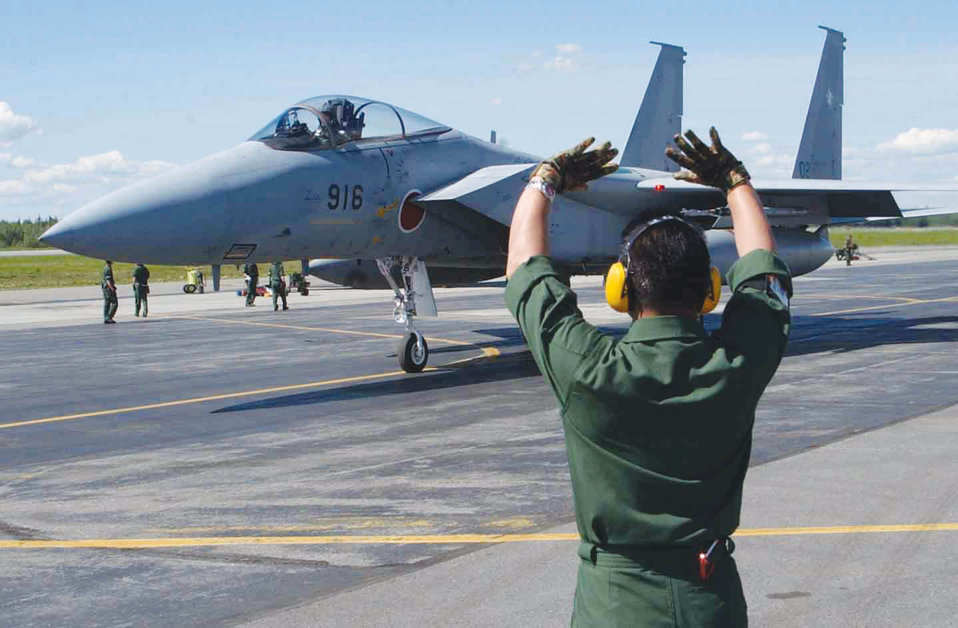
Cooperative Cope Thunder kicks off

EIELSON AIR FORCE BASE, Alaska -- A Japanese crew chief marshals an F-15 on the flightline June 7. This is the third consecutive year Japanese F-15s have participated in Cooperative Cope Thunder.